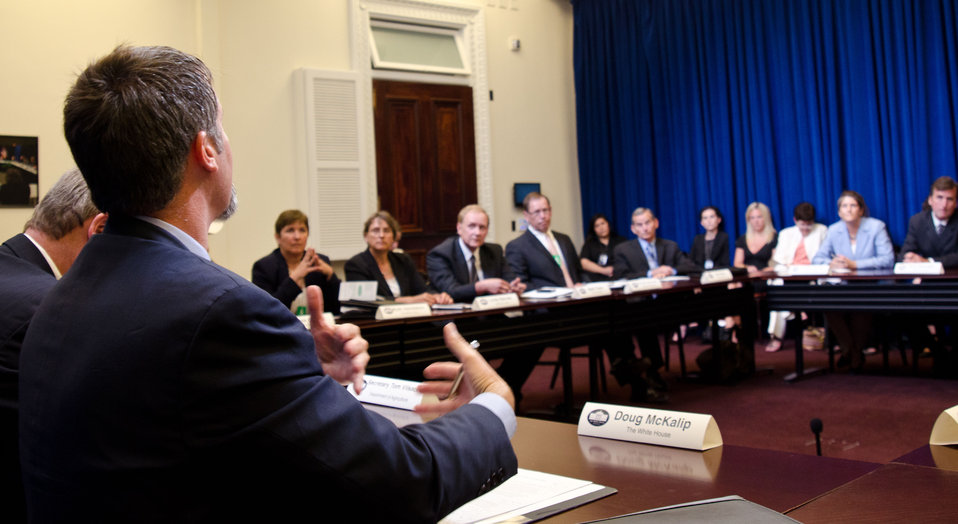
White House Domestic Policy Council Senior Policy Advisor for Rural Affairs Doug McKalip (near left), talks with Crista Carrell (second from right) and Rick Huszagh (right), representing Down to Earth Energy, GA, at the White House, in Washington, DC, on July 6, 2011. They were asked to participate along with President Barack Obama, Agriculture Secretary Tom Vilsack, the President's Domestic Policy Adviser Melody Barnes and rural communities leaders from across the country for the White House Rural Champions of Change event to strengthen rural communities and promote economic growth. When Rick Huszagh and Crista Carrell purchased part of her family’s farm in 1995, their focus was on farmland preservation as much as the creation of a successful business enterprise. Mountain Creek Farm started out selling Boer goats to purebred and commercial breeders and Bermuda hay to neighboring horse farms. Goat kids were raised each spring to sell for breeding stock or meat. The couple improved their farm marketing by participating in shows, performance tests, and field days. The farm’s proximity to the University of Georgia facilitated their involvement in herd management studies related to the control of internal parasites. They took full advantage of resources offered by the Cooperative Extension Service and the Natural Resources Conservation Service, and participated in the Environmental Quality Incentives Program (EQIP). Rick and Crista’s interest in sustainability issues on the farm led them to research and implement small-scale biodiesel production for the tractors in 2005. In 2006, they intensified their renewable energy involvement when they were awarded a Renewable Energy for America Program (REAP) grant and USDA guaranteed loan. Along with like-minded partners, they established Down to Earth Energy, a commercial biodiesel production facility located adjacent to the farm. Concern with some of the inefficiencies in the biodiesel process led them to partner with the University of Georgia to develop a more effective catalyst. The concept was further funded by an EPA Small Business Innovation Research Grant (SBIR) and a Venturelab grant. Crista was appointed a Walton County Soil and Water Conservation District Supervisor in 2006. She has spearheaded the district’s sponsorship of community forestry activities in Monroe and served as the coordinator of Atha Road Elementary School’s outdoor classroom from 2003-2011. Her work as a district supervisor led to her being hired as the first full-time Executive Director of the Georgia Association of Conservation District Supervisors (GACDS) in 2007.